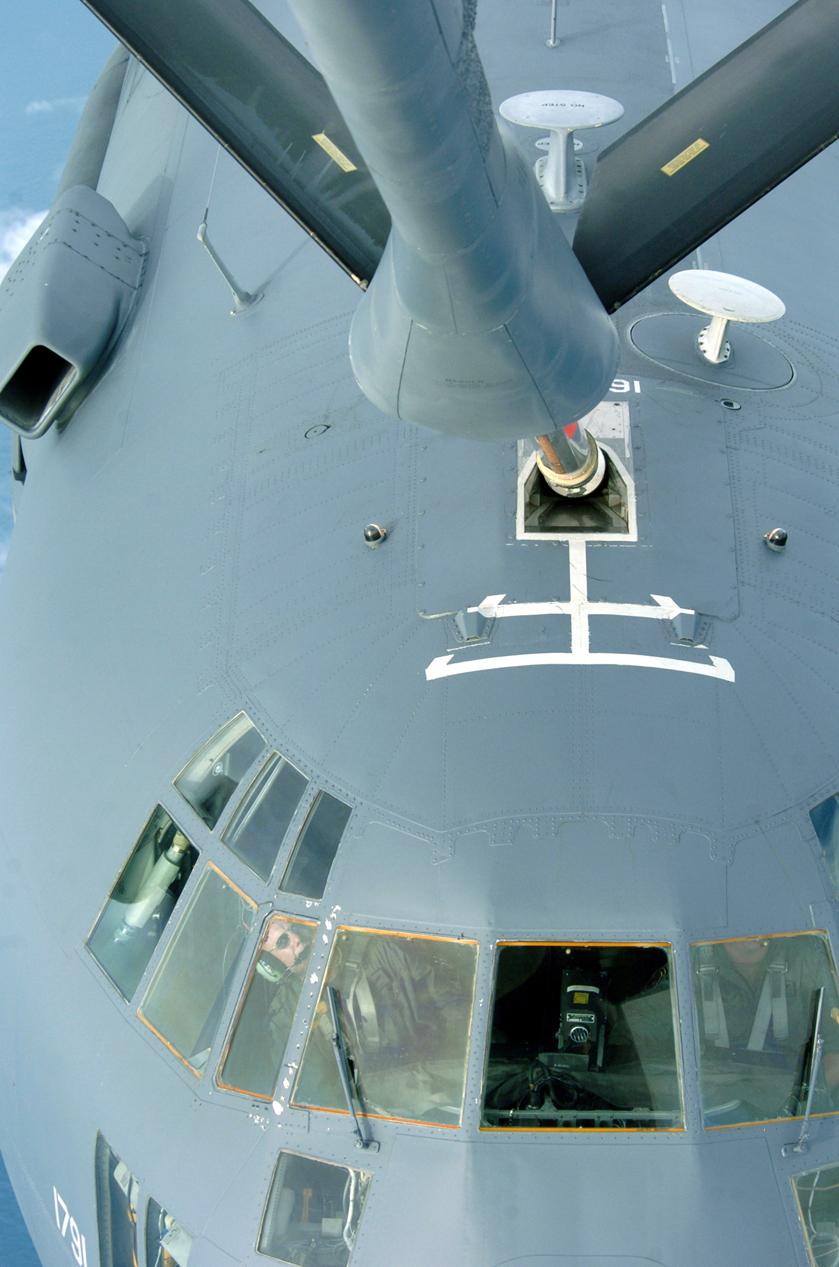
Got gas?

OVER THE PACIFIC OCEAN -- Maj. Jeff Flint looks up at a KC-135 Stratotanker from the 909th Air Refueling Squadron at Kadena Air Base, Japan. The refueling squadron's aircrews support peacetime operations and all levels of conflict in the Pacific theater. He is a C-130 Hercules pilot with the 1st Special Operations Squadron, also at Kadena.